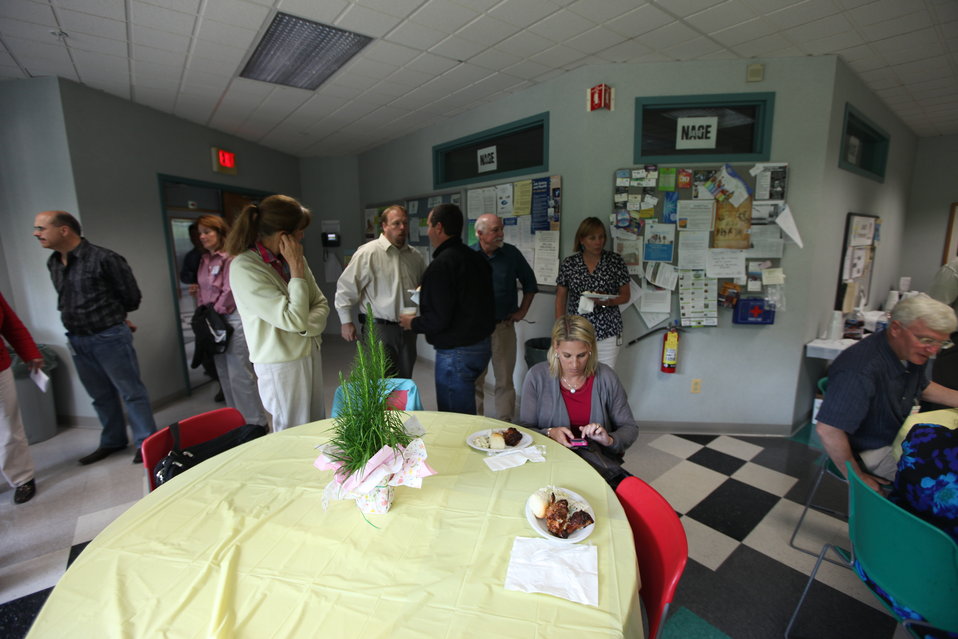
Northeast Region Employee Appreciation Awards

Luncheon